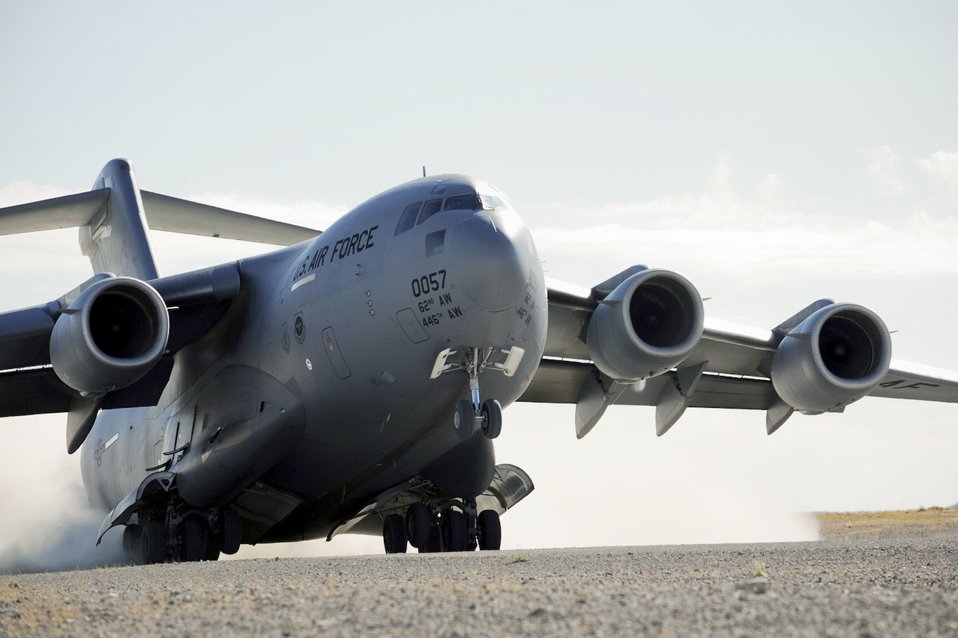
Globemaster power

A C-17 Globemaster III takes off from an airfield on the Nevada Test and Training Range near Nellis Air Force Base during the Mobility Air Forces Exercise Nov. 18, 2009. The C-17 is participating in the exercise which provides realistic training for combat air forces, mobility air forces and U.S. Army Soldiers.